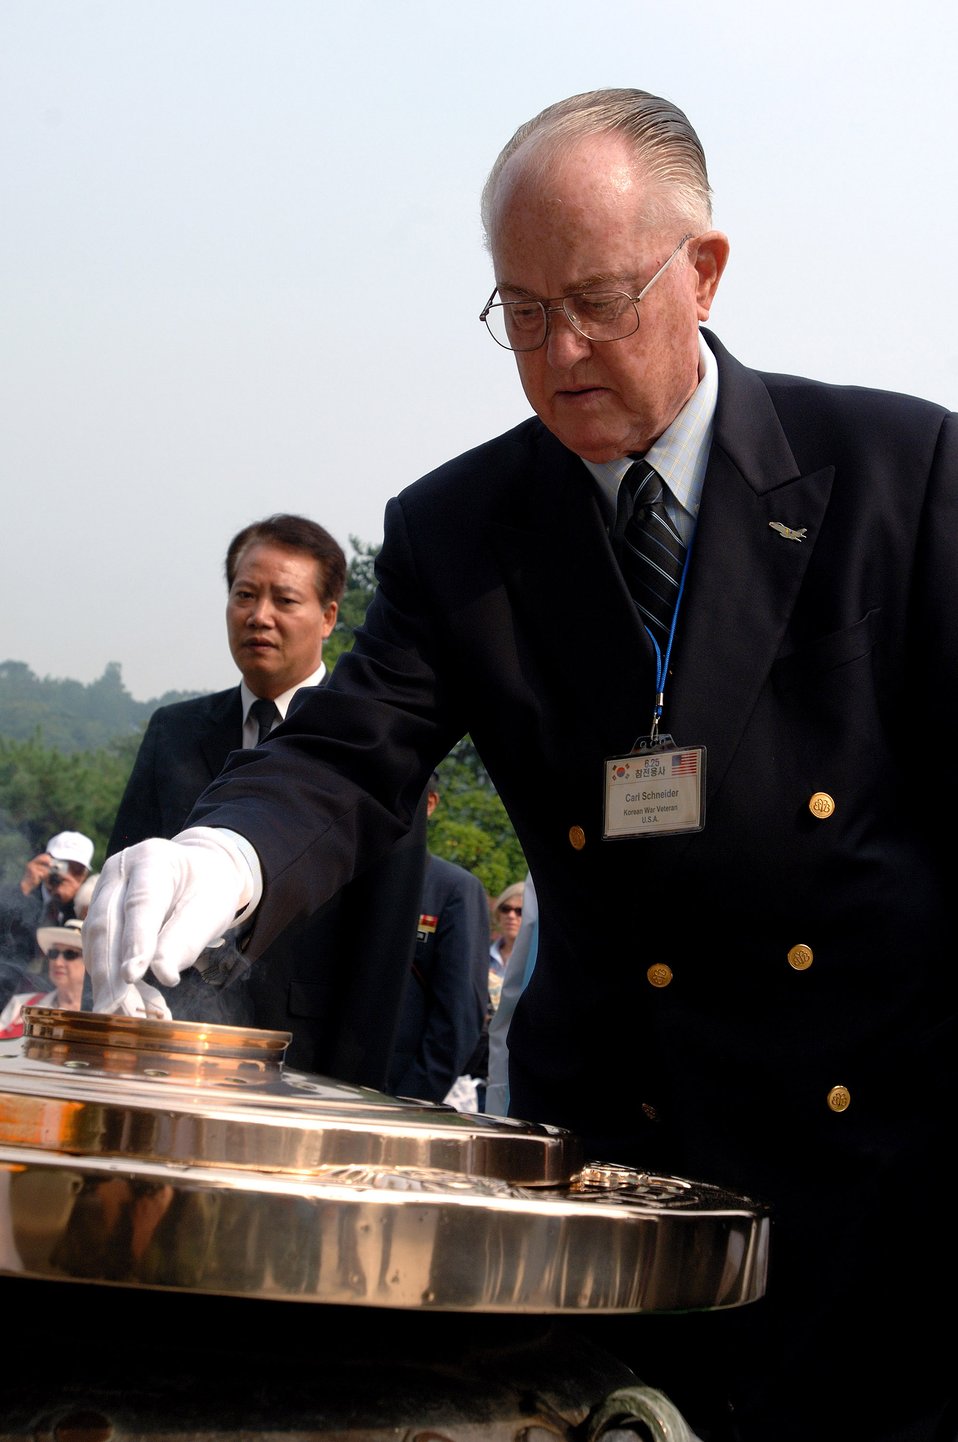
Korean War veterans give sage advice to Airmen

Retired Maj. Gen. Carl G. Schneider pours incense into a flame to honor Korean War veterans during a ceremony at the South Korean National Cemetery Sept. 12. The South Korean government's Revisit Korea program invites war veterans each year to come to South Korea to honor the men and woman from 21 countries who served during the Korean War. Nearly 25,000 veterans have participated in this program since 1975.